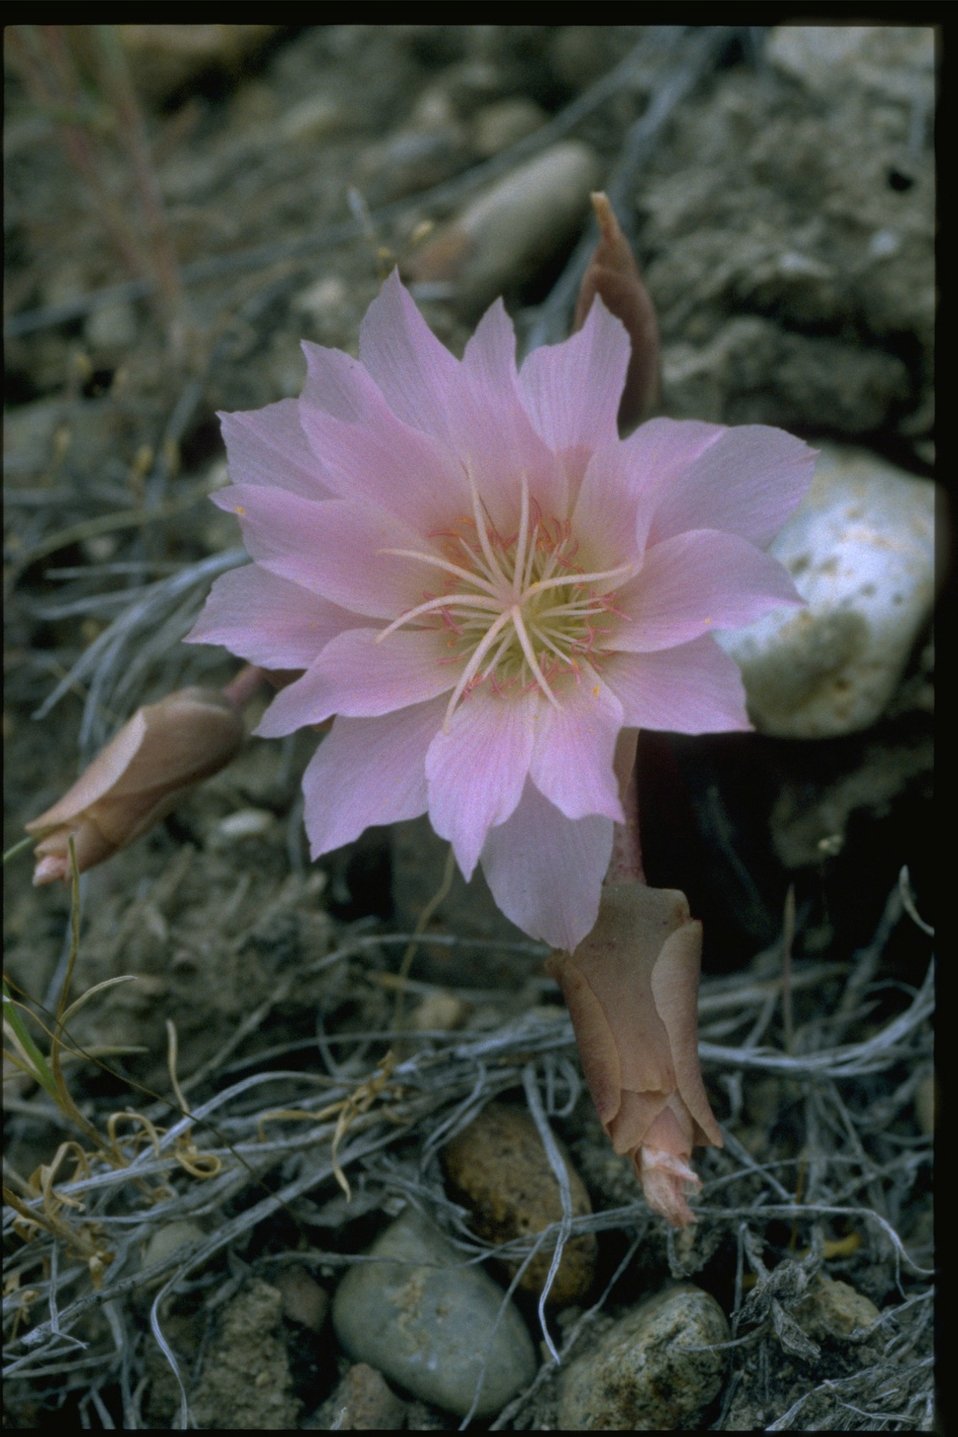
Closeup shot of Bitterroot wildflower.